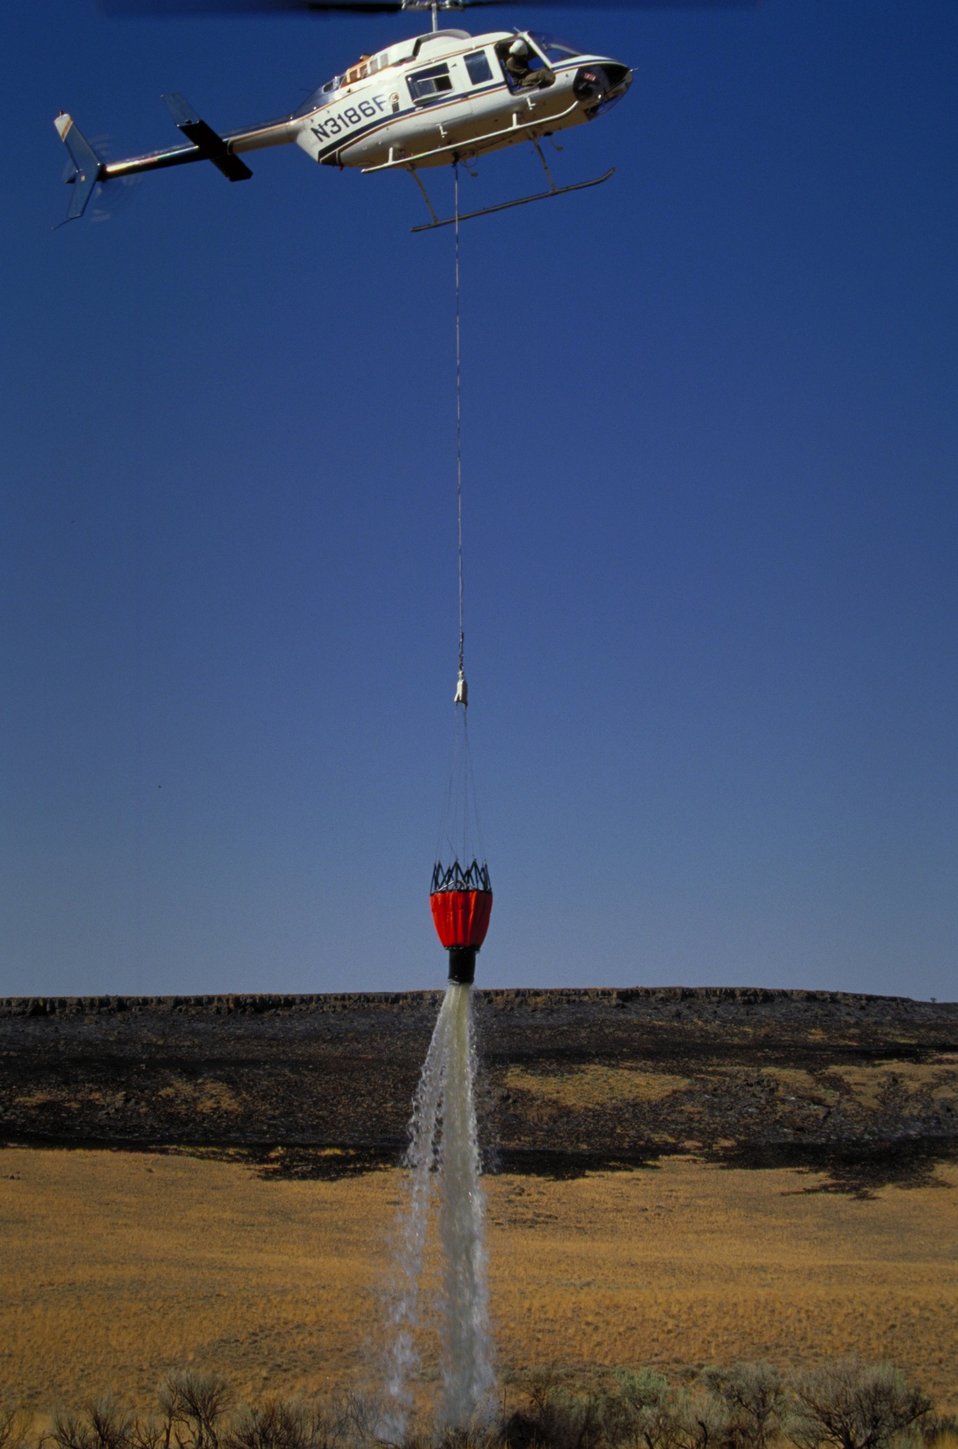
Helicopter bucket drop Fire Season 2000 Lower Snake River District LSRD